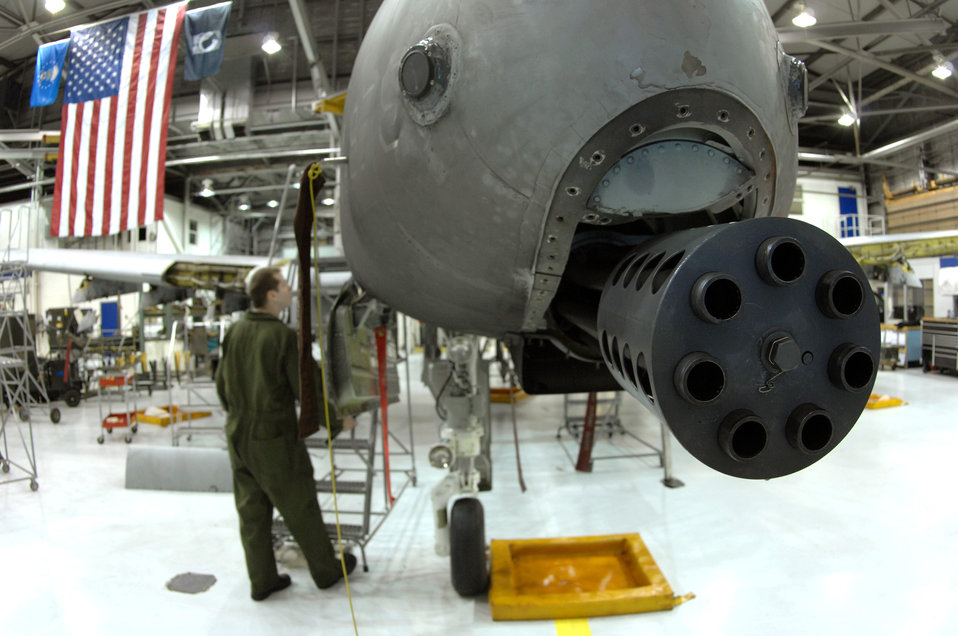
It's just a phase they're going through

An A-10 Thunderbolt II goes through phase maintenance March 13 at Eielson Air Force Base, Alaska. Phase maintenance is an overhaul of the entire aircraft which ensures it is ready for safe flight. A-10 pilots use a 30mm GAU-8/A 7-barrel Gatling gun as their primary weapon for disabling enemy ground targets. The gun can fire 3,900 rounds per minute.